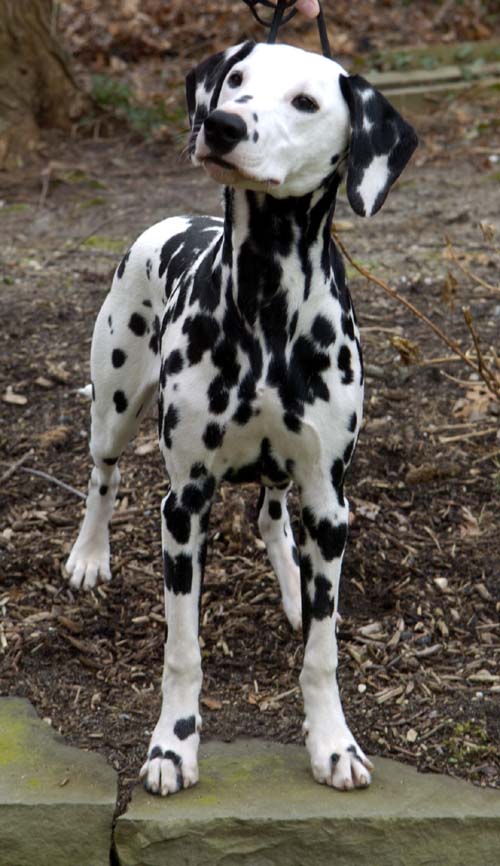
A Dalmatian named Zagreb's Temptress at TNG, pictured at 6 months.